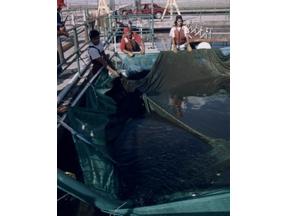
Hanford salmon

In 1994 members of the Yakama Indian Nation tended 500,000 young Chinook salmon in the Hanford K Pools, then released them into the Columbia River. After migration, the salmon will return in 4 years to spawn in the Hanford Reach, a part of the river flowing through the Washington site. The K Pools, never exposed to radioactive contamination, are equipped with pumps and pipes to the Columbia River and provide new uses for the site's surplus facilities. This could develop into a commercial fish growing project as well as increase the fish population in the area.